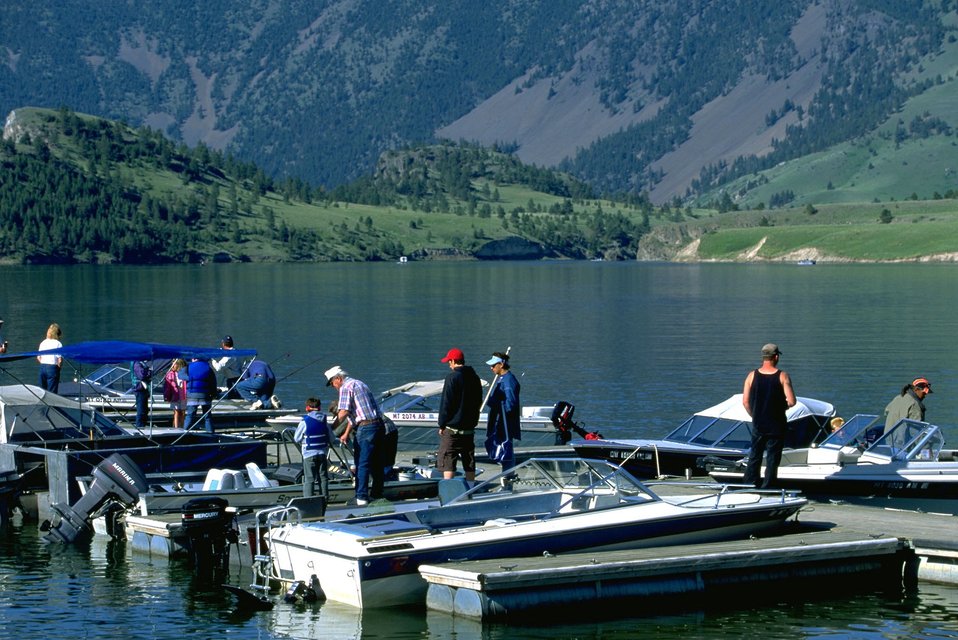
Boats at the marina at Log Gulch Campground